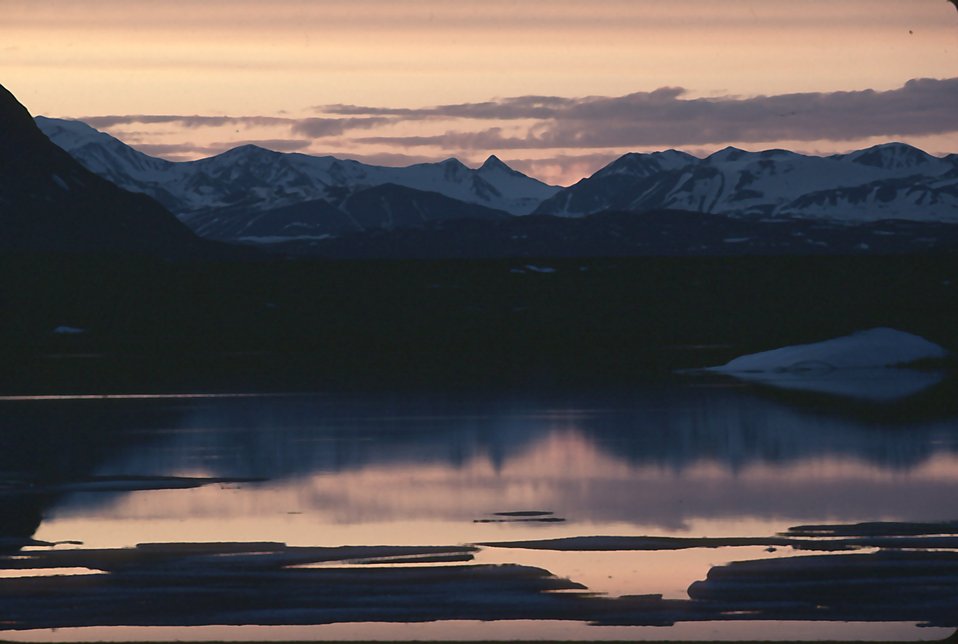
Sunset along Tangle Lakes, Denali Highway,Alaska